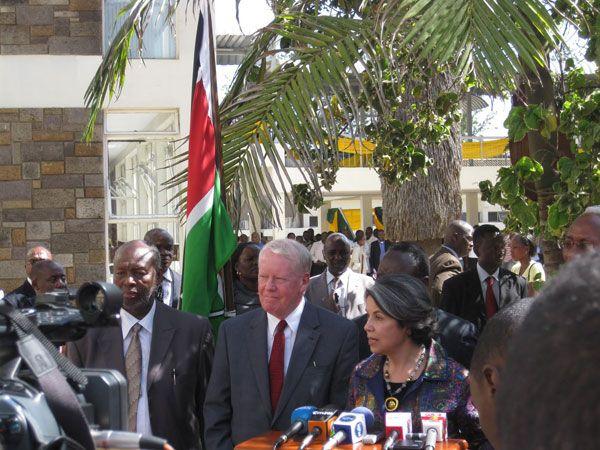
Under Secretary Otero and Ambassador Ranneberger Speak at Press Conference

Under Secretary of State for Democracy and Global Affairs Maria Otero and U.S. Ambassador to Kenya Michael E. Ranneberger speak at the press conference following the Town Hall meeting at Polytechnic University in Nairobi, Kenya, January 28, 2010.